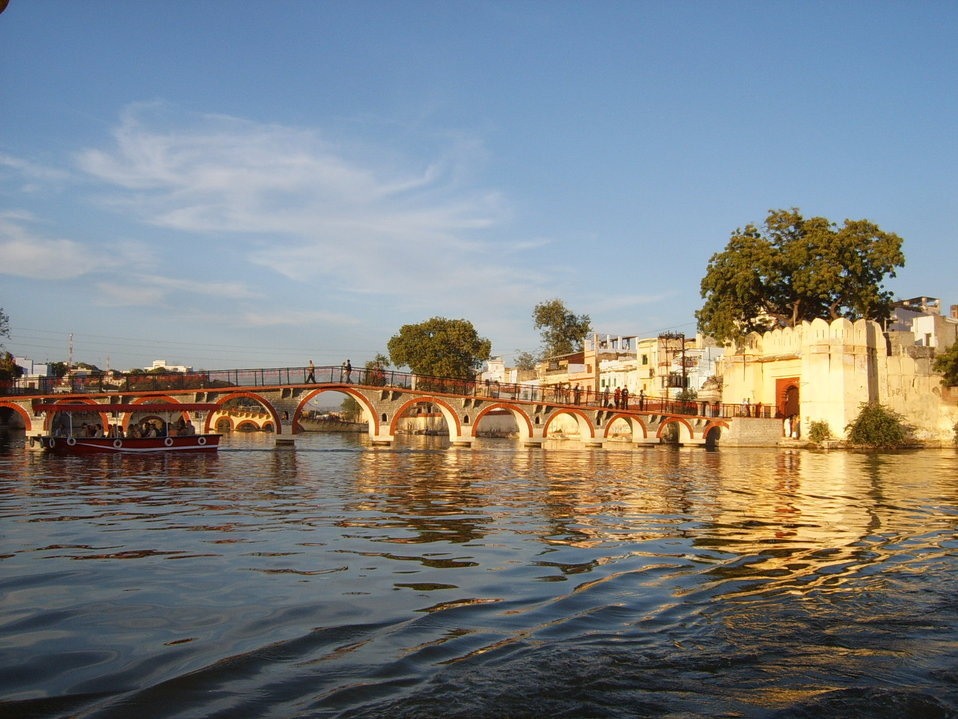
Français : Pont à Udaipur, novembre 2005.